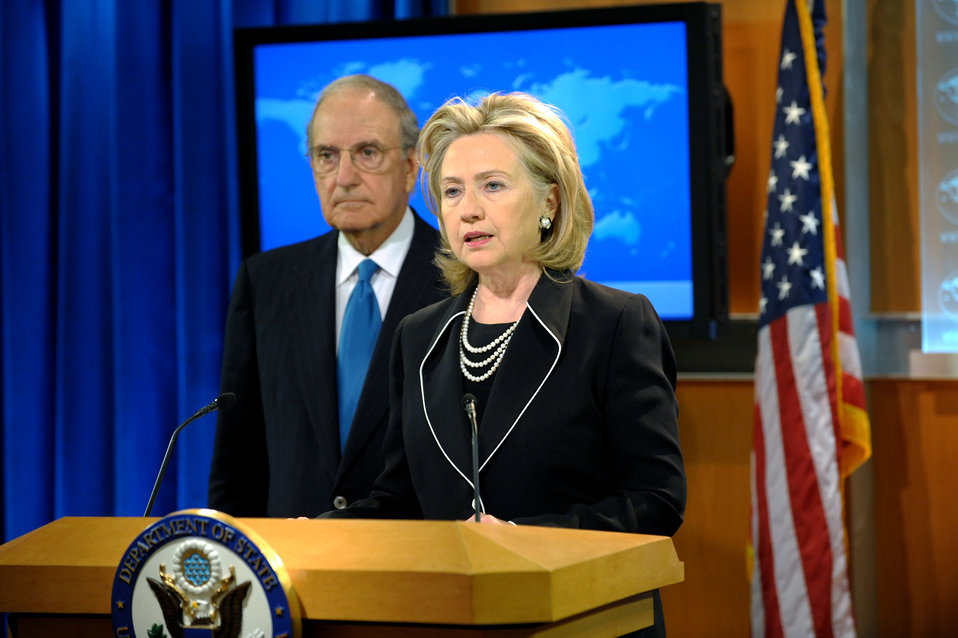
Secretary Clinton Briefing on Middle East Peace Process

U.S. Secretary of State Hillary Rodham Clinton briefs reporters on the Middle East Peace Process at the U.S. Department of State in Washington, DC, August 20, 2010. She is joined by Special Envoy for Middle East Peace Talks Senator George Mitchell.